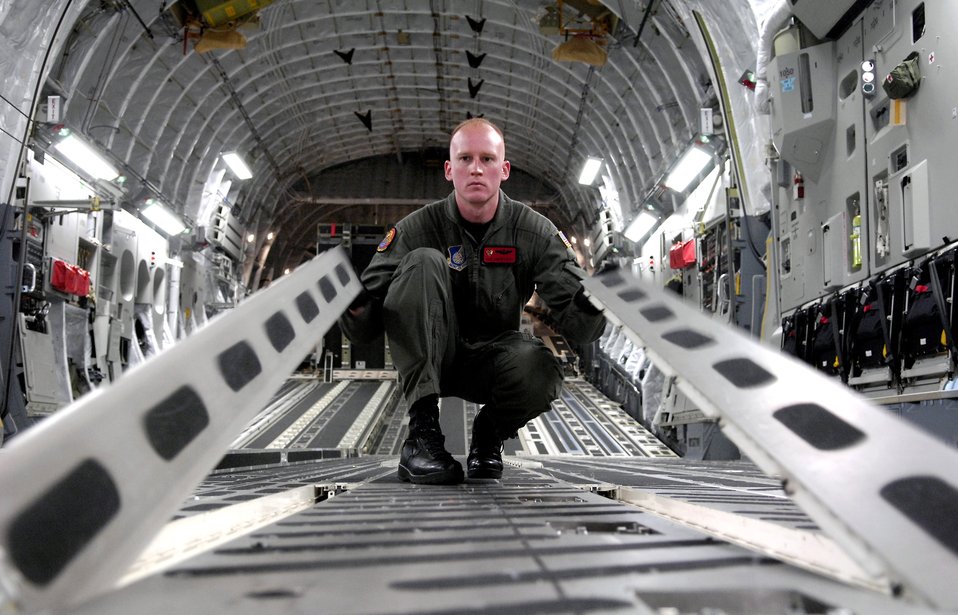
Airlift training

Tech. Sgt. Ansen Lucas flips over bi-directional rollers in the cargo bay of a C-17 Globemaster III in preparation for a training mission July 16 at Hickam Air Force Base, Hawaii. Sergeant Lucas is a loadmaster with the 535th Airlift Squadron.